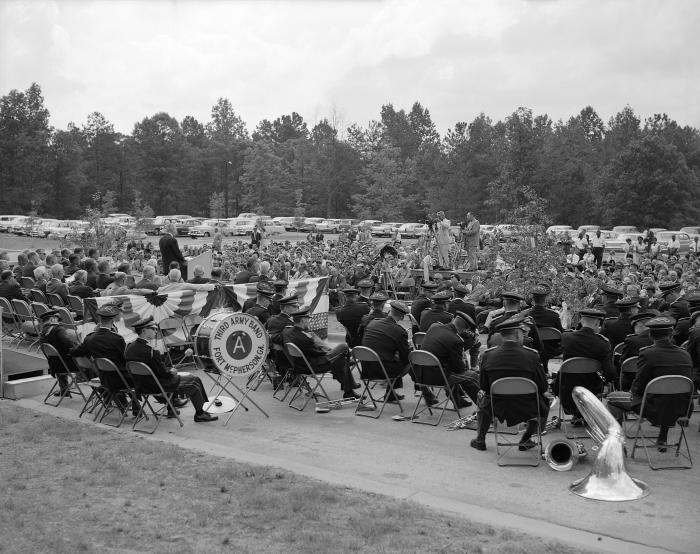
This historic photograph was captured in 1960 during one of the Center for Disease Control's (CDC) building dedication ceremonies.